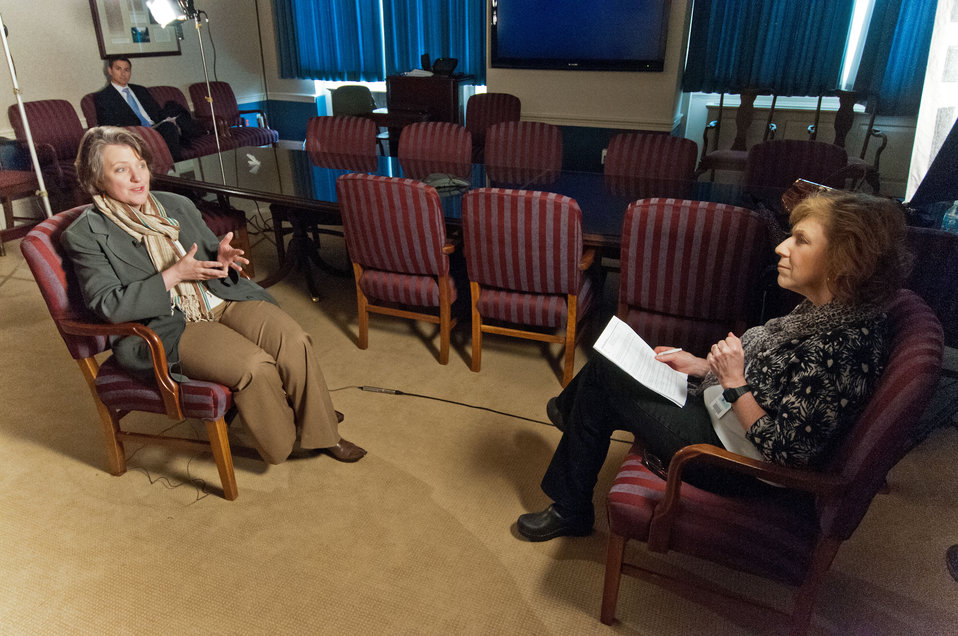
Deputy Secretary Dr. Kathleen Merrigan (left) is interviewed by Shelia Conlin (right) a producer with NBC News Channel at the United States Department of Agriculture in Washington, DC, Monday, April 23, 2012. Dr. Merrigan discussed the farm incubator program for beginning farmers in ranchers. USDA is trying to improve its programs to meet its goal of helping 100,000 new farmers and ranchers launch viable businesses. The last federal farm bill included grants to help universities, nonprofits and community organizations develop farmer-training programs. It also offered new farmers a leg up in competitive federal conservation and grant programs, created financial incentives for landowners to lease them land, and established more favorable loan terms for them.